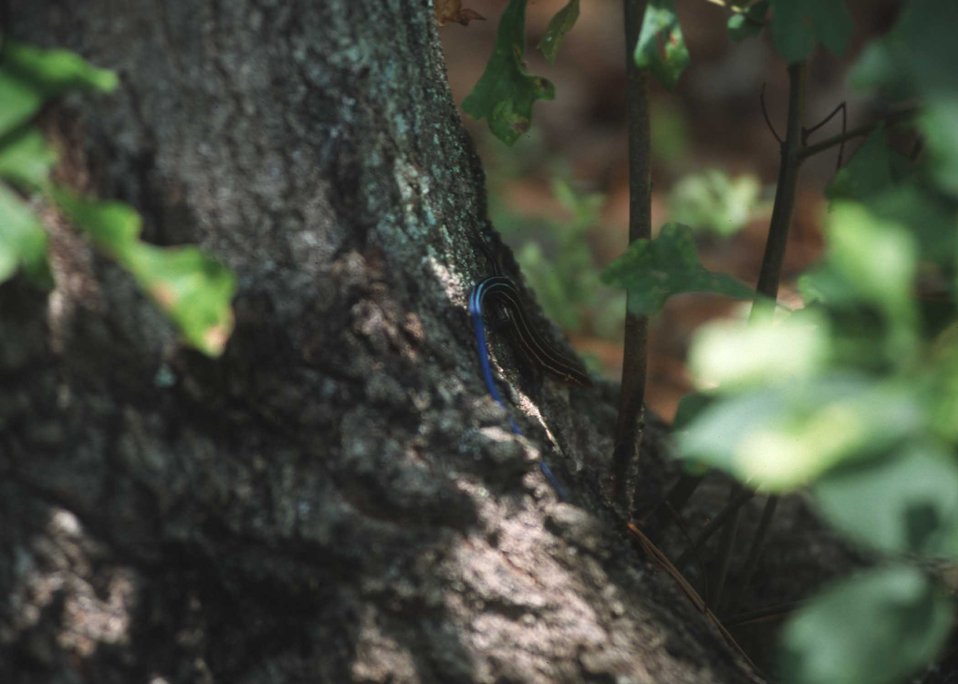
Trees provide many benefits for wildlife.